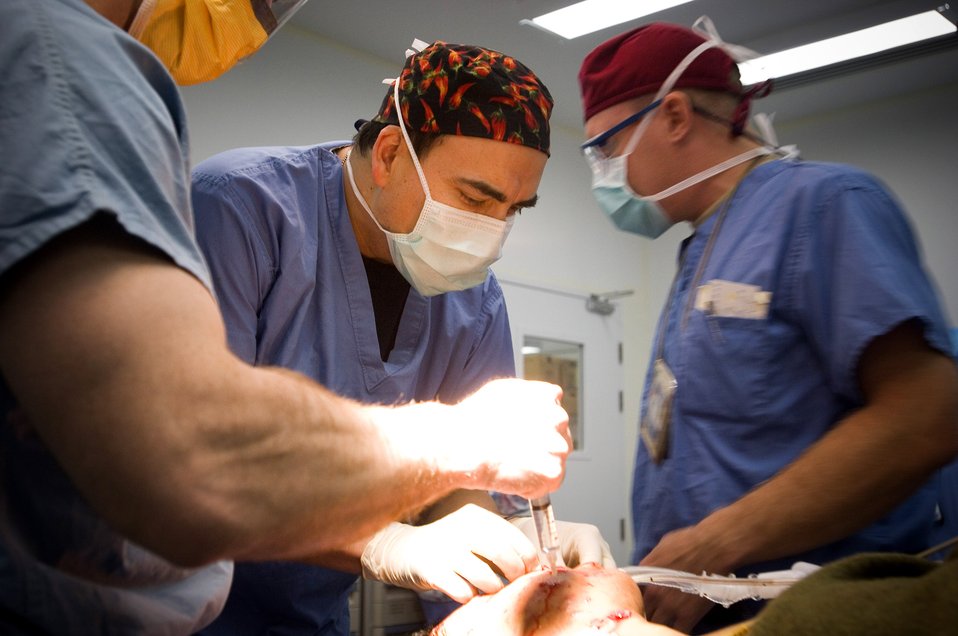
Air Force medics support trauma mission for warriors

Capt. George Moctezuma helps treat a wounded Iraqi security forces member at the Air Force Theater Hospital Dec. 28, 2007, at Joint Base Balad, Iraq. The patient's face was peppered with stone pebbles from a blast. Captain Moctezuma, an operating room nurse, is assigned to the Wilford Hall Medical Center in San Antonio.